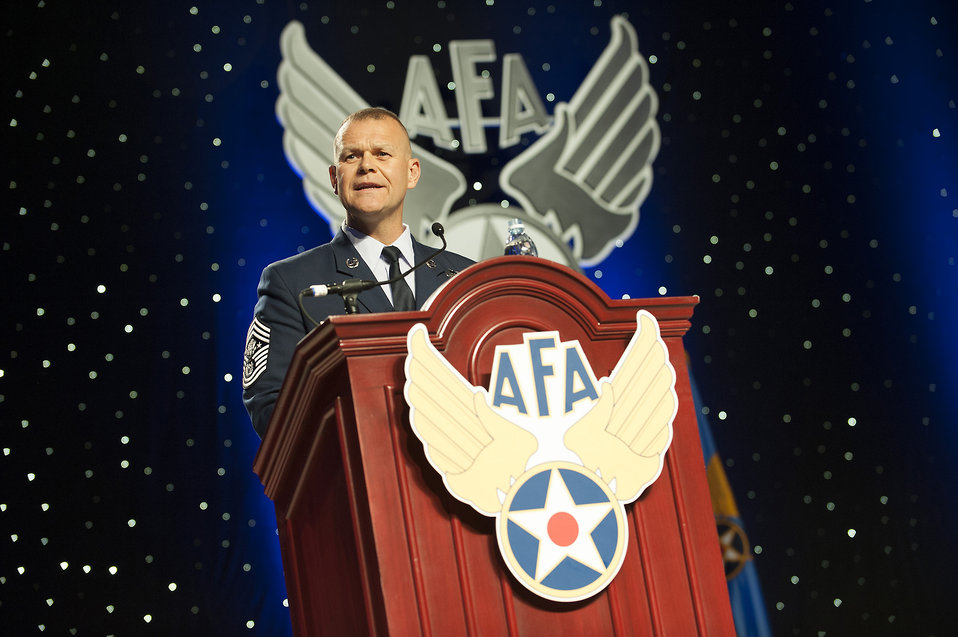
Air Force recognizes 2012 Outstanding Airmen of the Year

Chief Master Sgt. of the Air Force James Roy speaks during the 12 Outstanding Airmen of the Year reception and awards dinner as part of the 2012 Air Force Association's Air and Space Conference and Technology Exposition in Washington, D.C., Sept. 17, 2012.